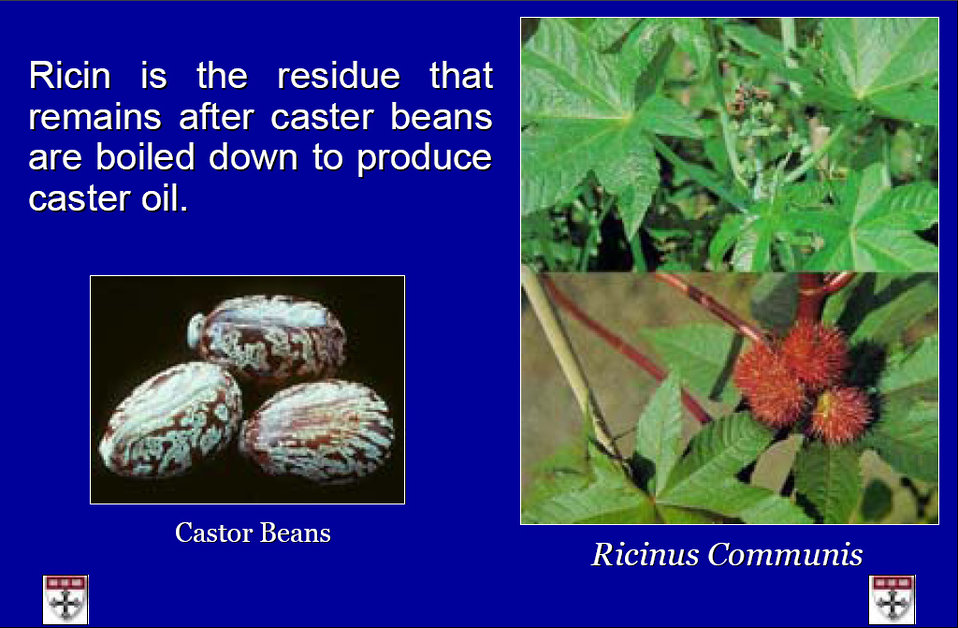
This presentation highlights the history, chemistry, and uses of ricin, a highly toxic poison made from castor beans.